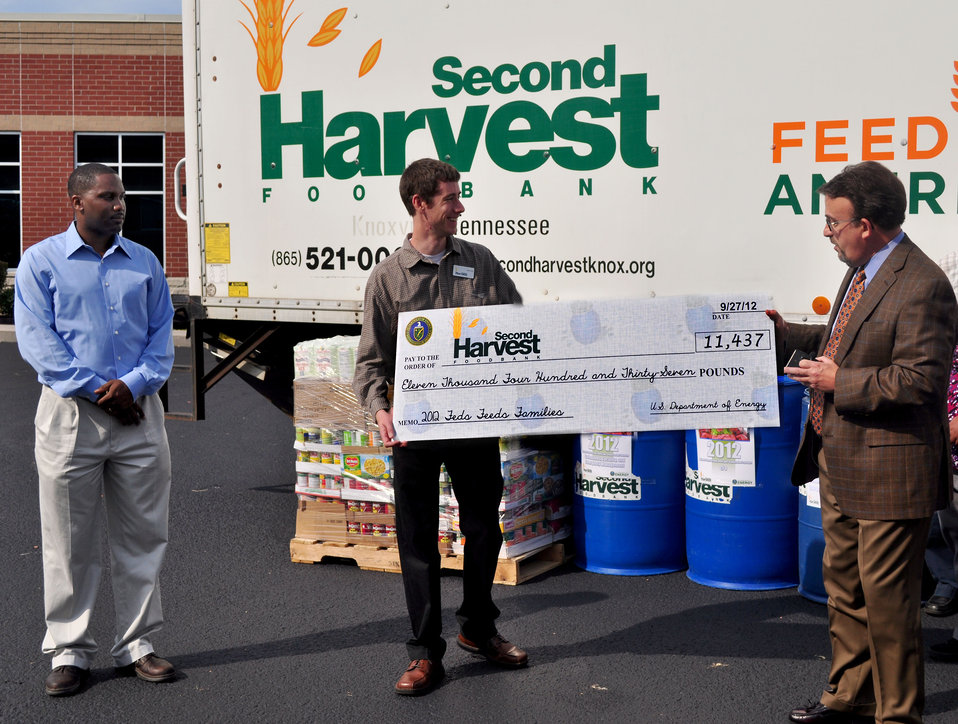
Second Harvest Feds Feed Families Oak Ridge

DOE photo by Lynn Freeny
9/27/2012 Oak Ridge Tennessee
DOE's John Shewairy (right) gives Second Harvest's John Bell (middle) the agency's 2012 food donation as part of the Feds Feed Families campaign. Aaron White (left) coordinated this year's campaign as part of DOE's employee mentor program.